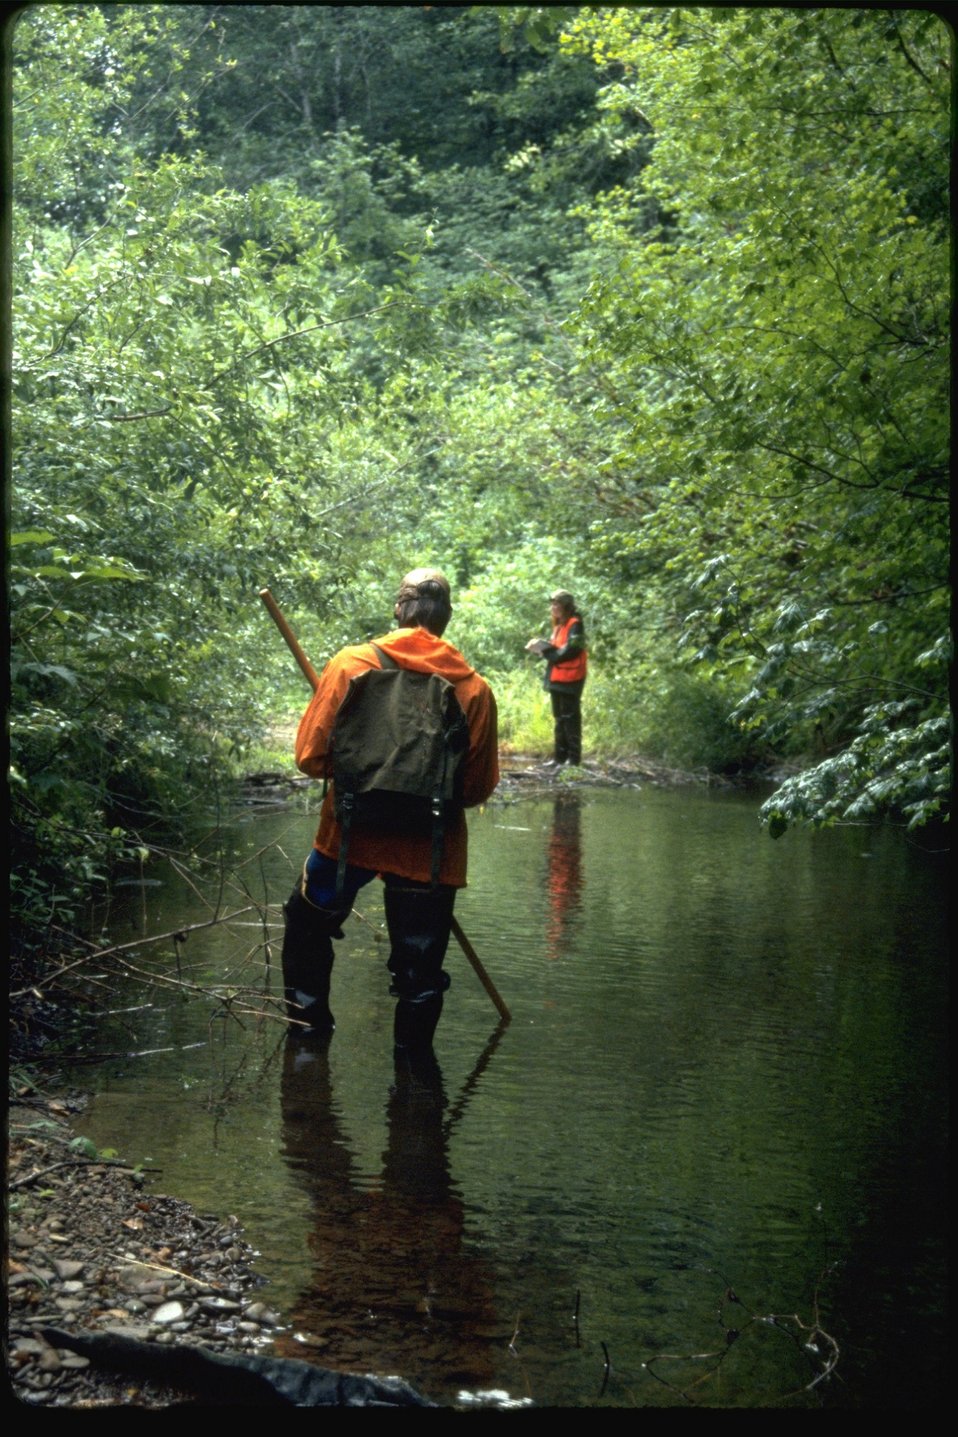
Sarah and Russ surveying Smith Creek during habitat study.